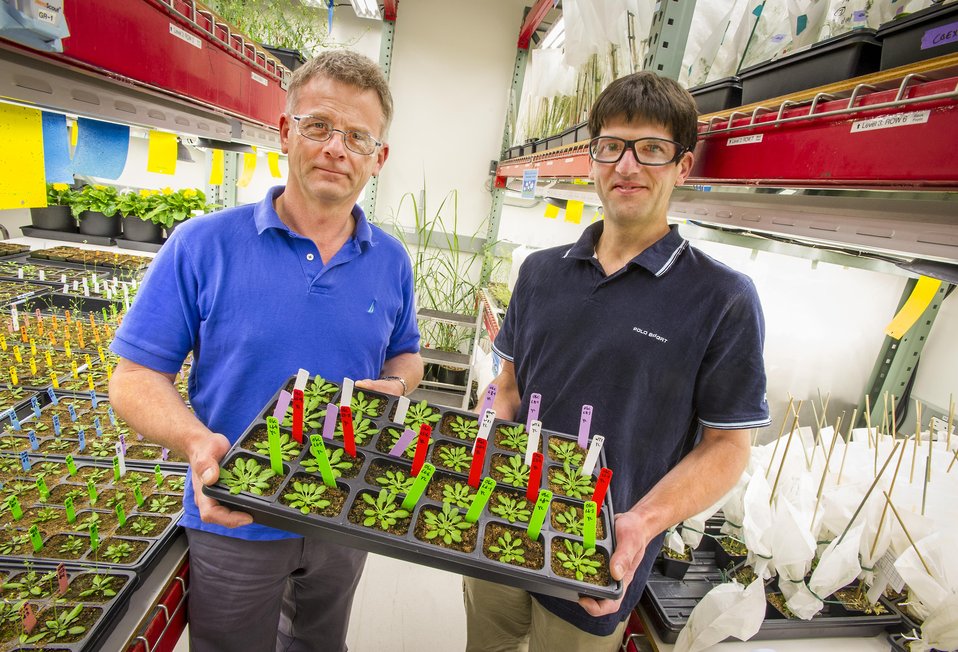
The Joint Bioenergy Institute researchers hold a tray of Arabidopsis Thaliana plants, research on engineering plant cell walls to make the sugar within more accessible.

The new center led by Lawrence Berkeley National Laboratory, University of California campuses in Berkeley and Davis, and Stanford University. Research at the DOE JBEI will focus on biofuels-liquids derived from the solar energy stored in plant biomass. Harnessing even a light fraction of the total solar energy available each year could meet most if not all of the nation's annual transportation energy needs. The other two DOE Bio-Energy Research Centers are the DOE Great Lakes Bioenergy Research Center led by University of Wisconsin in Madison, Wisconsin in close collaboration with Michigan State University in East Lansing, Michigan.